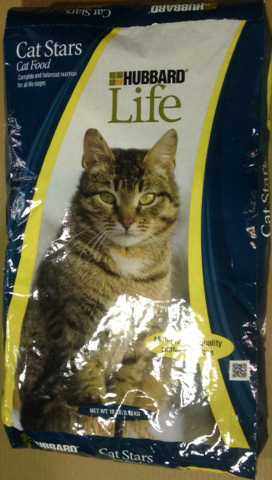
RECALLED – Dog Food, Cat Food

February 5, 2014 – Product Recall – Pro-Pet LLC Recalls a Limited Number of Dry Dog and Cat Foods Due to Possible Salmonella Contamination.